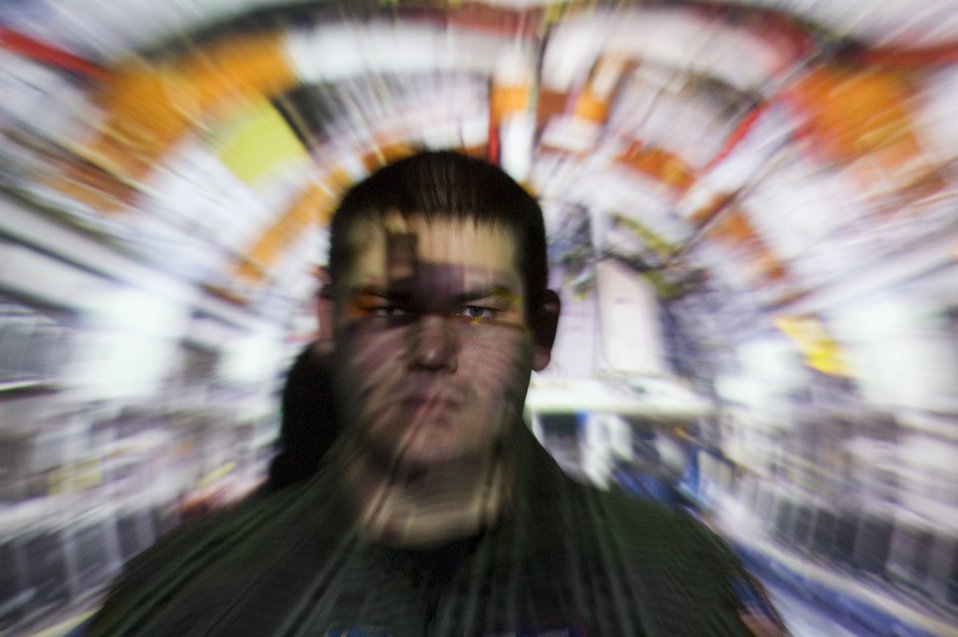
Taking a trip in a C-17 simulator

Staff Sgt. Daniel Paxton, an aeromedical evacuation technician instructor, observes students during a virtual walk-through of a C-17 Globemaster III March 15 in a simulator that allows students to experience the aircraft's med-evac capabilities in a classroom environment.